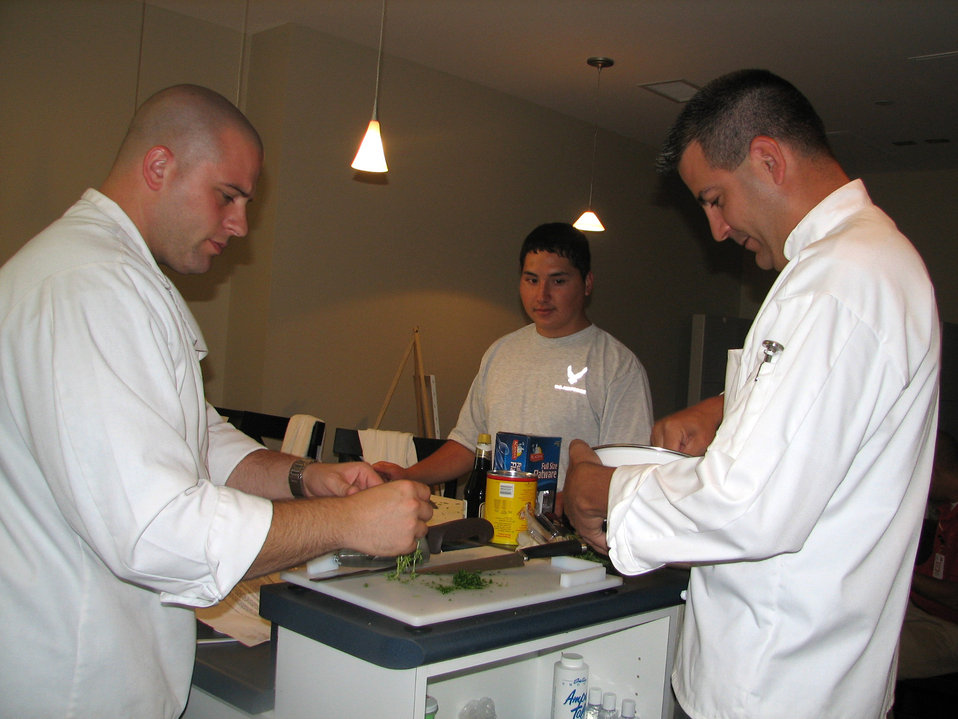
Airmen bring joy through cooking at Center for the Intrepid

Tech. Sgt. Jason Simas and Staff Sgt. Michael Leo prepare a meal for Airmen at the Center for the Intrepid June 24 in San Antonio. Airman 1st Class Kevin Krogh assists in the preperation. The sergeants are enlisted aides to the Air Education and Training Command commander and vice commander. They volunteered their culinary talents to support sevicemembers in treatment at the center.